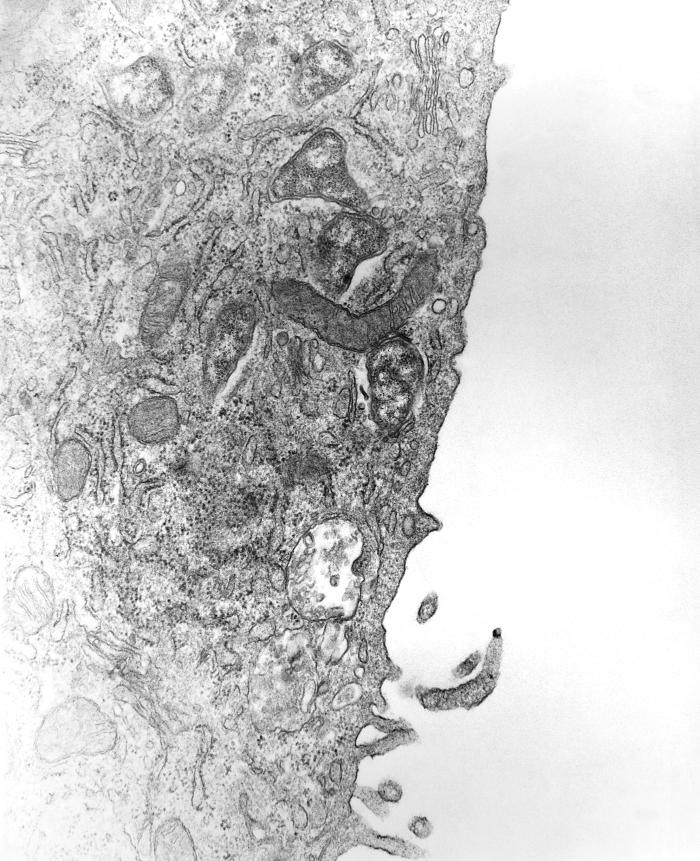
This 1976 transmission electron micrograph (TEM) depicted a hypertrophic peritoneal mesothelial cell from mouse that had been experimentally infected intraperitoneally with Orientia tsutsugamushi rickettsial micro-organisms. This micrograph captured an organism as it appeared within a phagocytic vacuole. An outer third membrane, of probable host cell origin, was disintegrating, leaving behind only its electron-dense remnants.